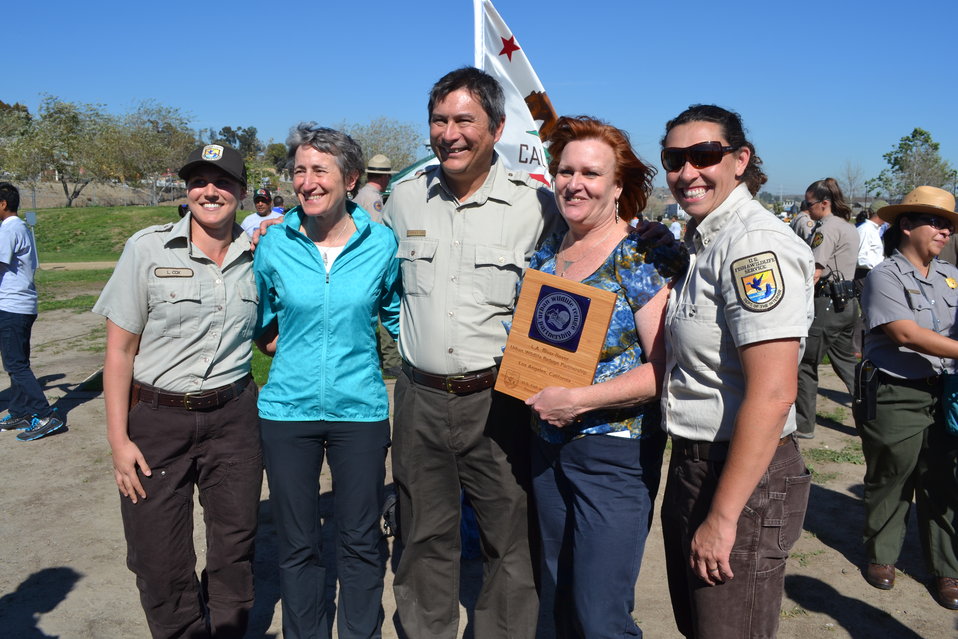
SOI Sally Jewell Visit to LA

From left: Public Information Specialist for the SDNWR Complex Lisa Cox, Secretary Sally Jewell, Project Leader for the SDNWR Complex Andy Yuen, Director of Education Programs for the Friends of the Los Angeles River Shelly Backlar, and Environmental Education Specialist for the SDNWR Complex Chantel Jimenez.
(Anne Dove, NPS for the USFWS)